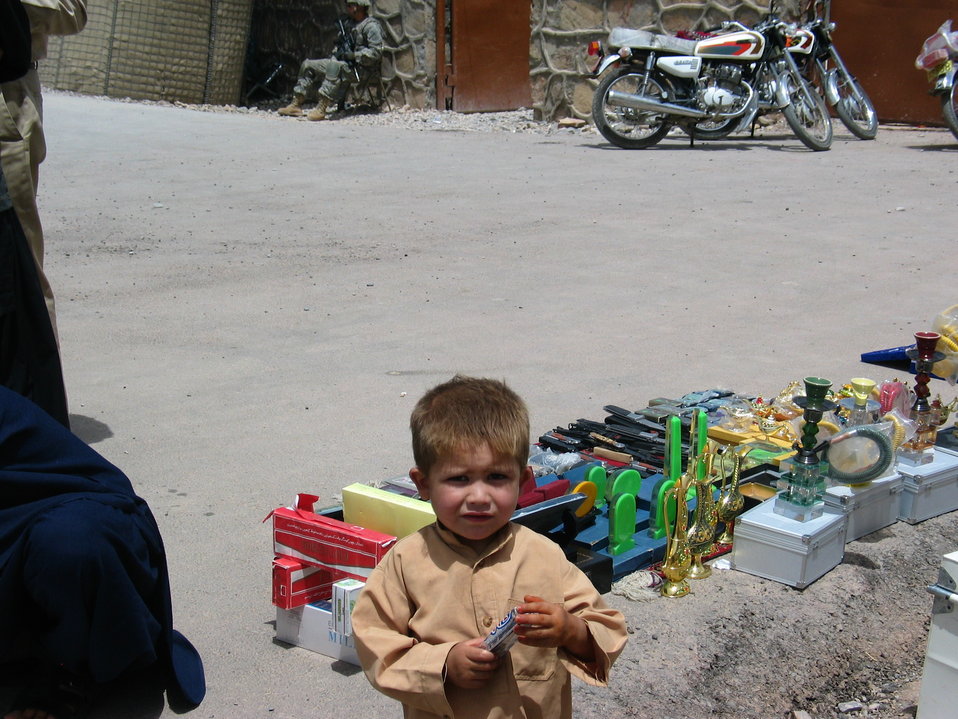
CODEL Berman